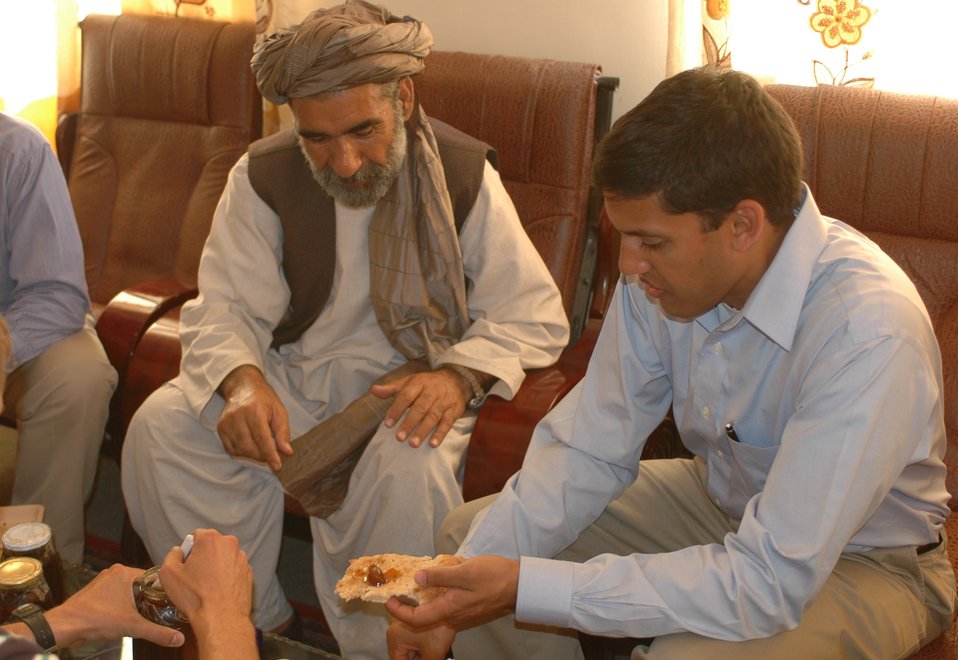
Dr Shah Visits Argandab April 10, 2010